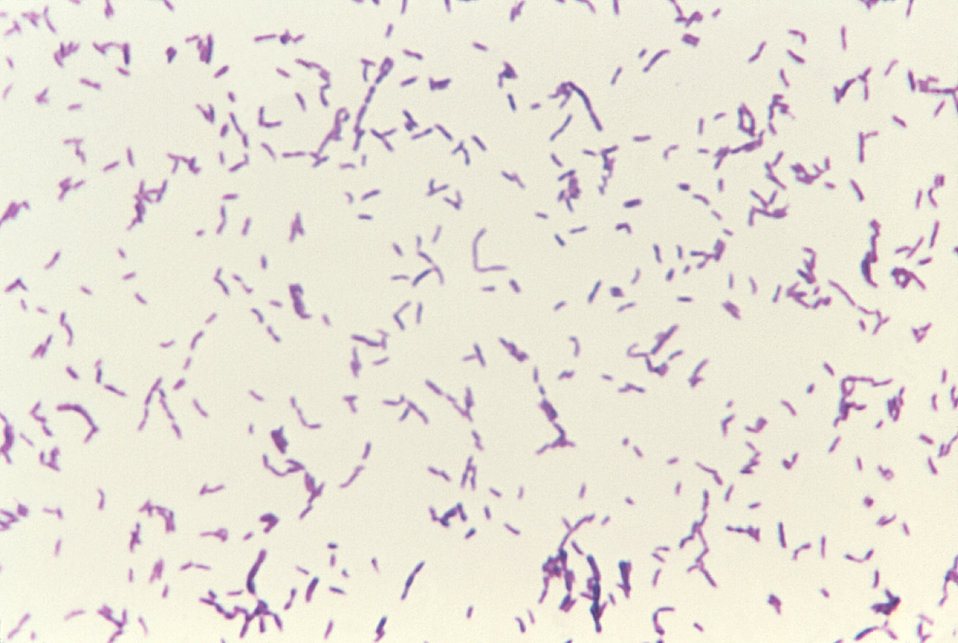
Magnified 1125X, this photomicrograph revealed the presence of numerous Gram-positive bacilli, or variable-rod-shaped, Bifidobacterium eriksonii bacteria. This specimen was obtained from a blood agar plate, which had been cultured for 48hrs. Bifidobacterium spp. May take multiple forms based on their rod-shaped morphology, including curved rods, clubbed rods, and 'Y'-shaped, or bifurcated rods, hence the derivation of their genus' nomenclature.